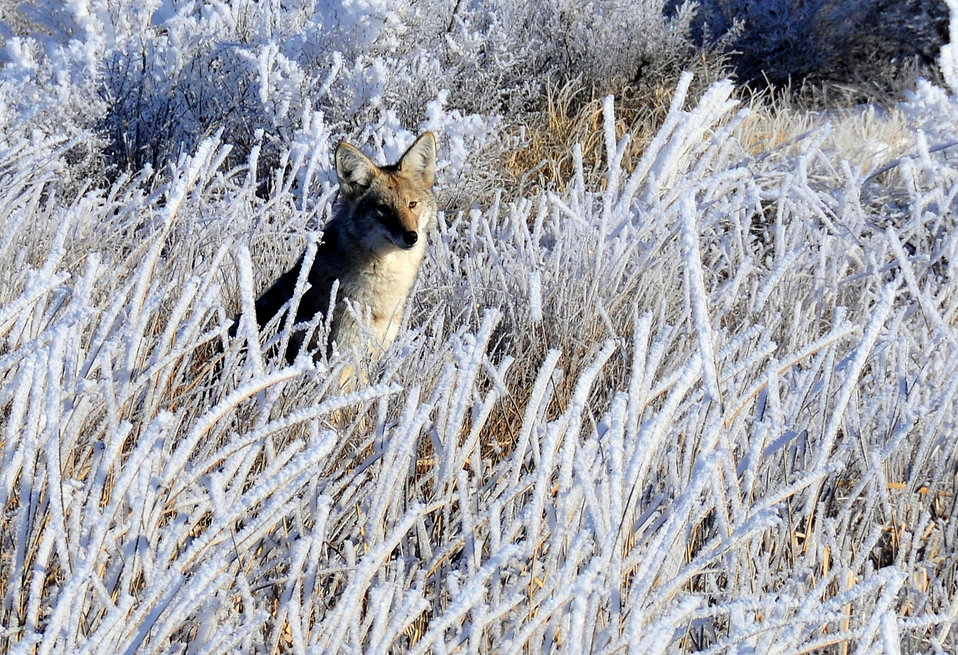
Coyote in hoar frost on Seedskadee NWR 2

Hoar frost forms during the winter when there is evening fog and no wind. In the morning, as soon as the wind blows or the sun begins to shine, the hoar frost is quickly gone. This coyote was looking for a morning breakfast of meadow vole on Seedskadee National Wildlife Refuge.